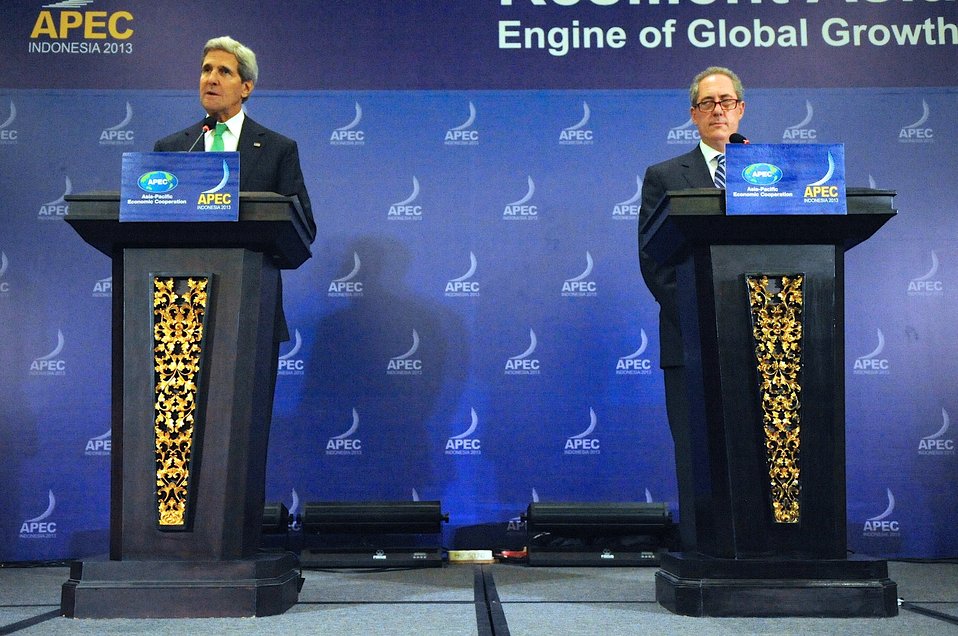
Secretary Kerry and Ambassador Froman Speak to the Press at the APEC Ministerial Meetings in Indonesia

U.S. Secretary of State John Kerry and U.S. Trade Representative Ambassador Michael Froman speak with reporters during a news conference after the APEC Ministerial meetings in Bali, Indonesia, on October 5, 2013.